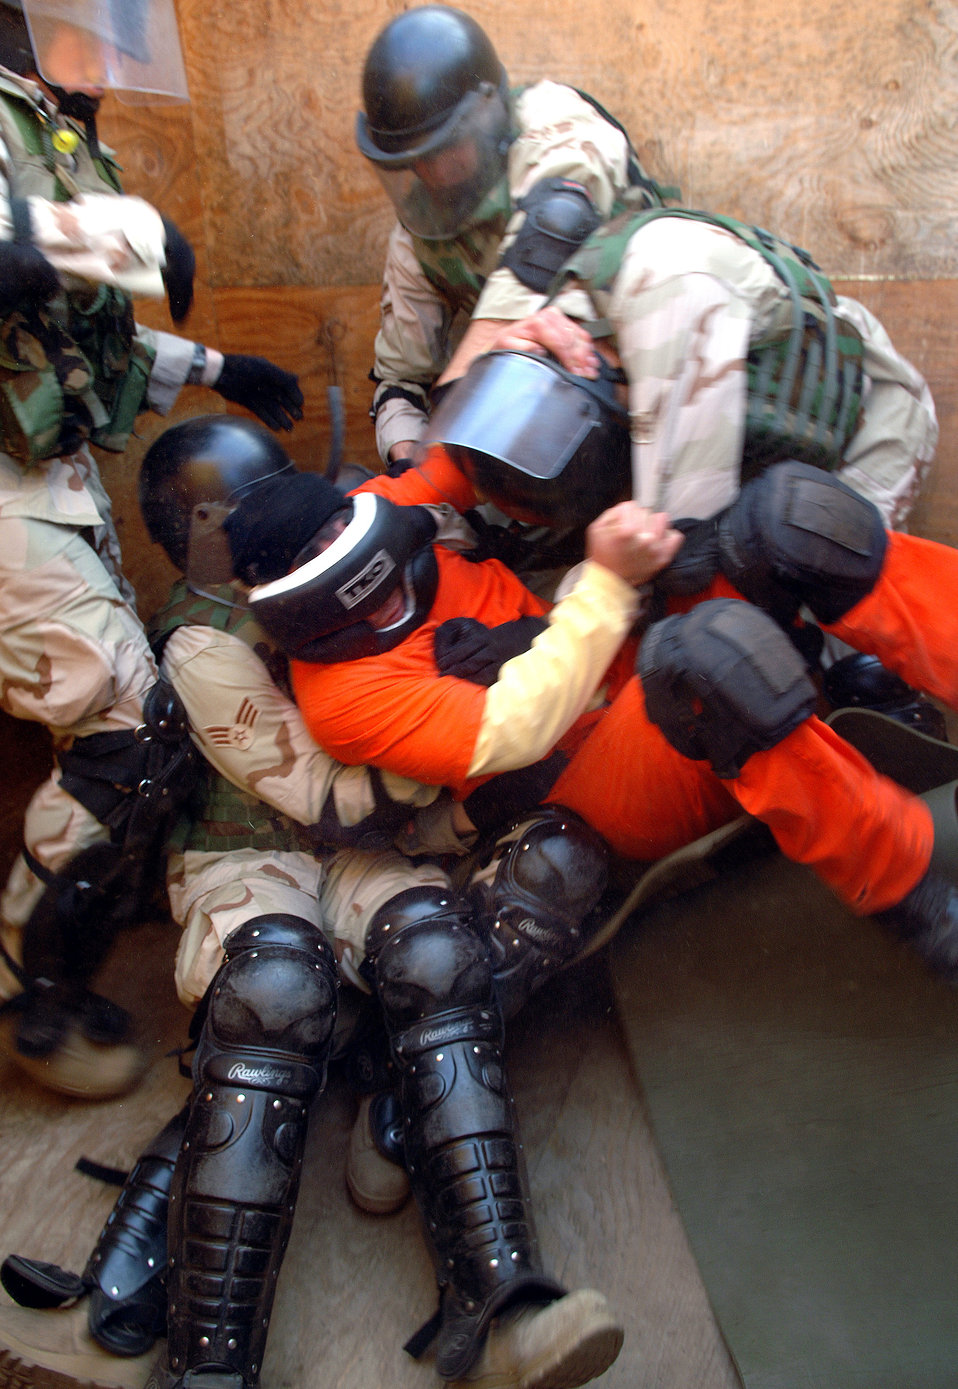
Detainee training operations teach survival skills

Airmen, training as detention facility guards, try to subdue Army Staff Sgt. Jesse Diego during detainee training operations on April 26, 2006, at Fort Lewis, Wash. Sergeant Diego is role-playing as an hostile detainee. This training prepares Airmen by replicating situations they may encounter while deployed.